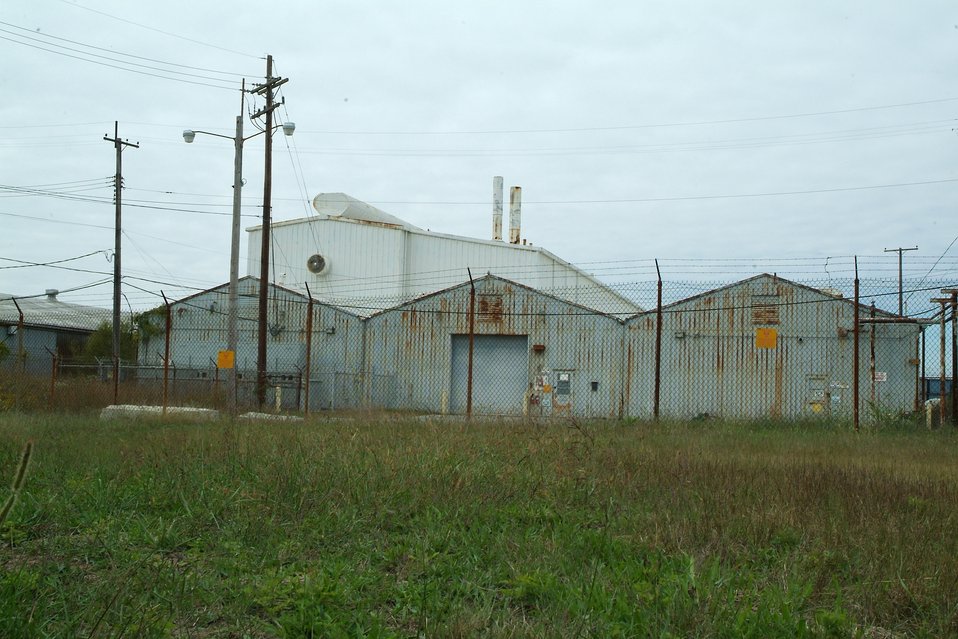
East End Smelter before demolition

Smelter work which ended with September 2010 demolition.